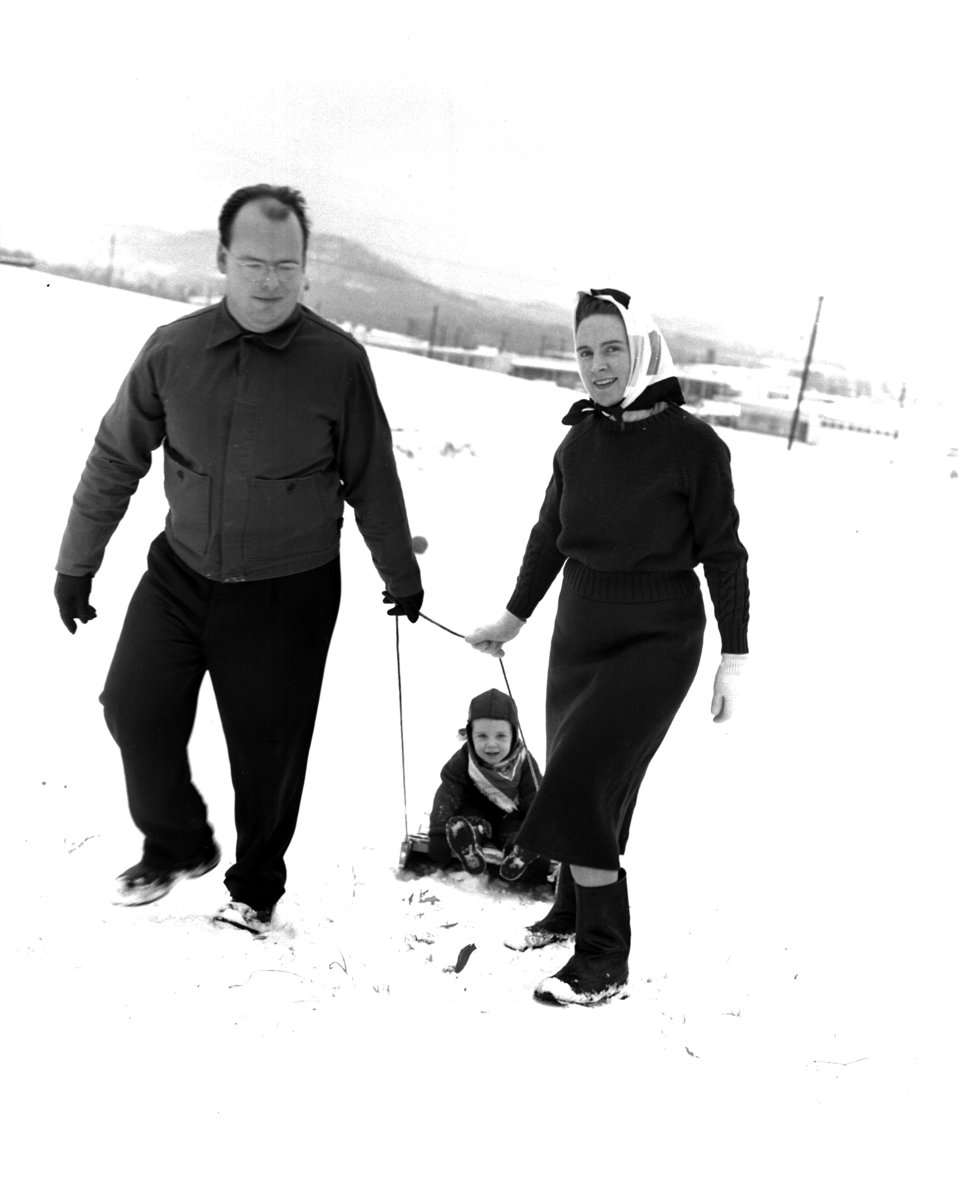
Fun in the Snow 1

4276-7u DOE Photo by Ed Westcott Oak Ridge Tennessee 1-25-1948